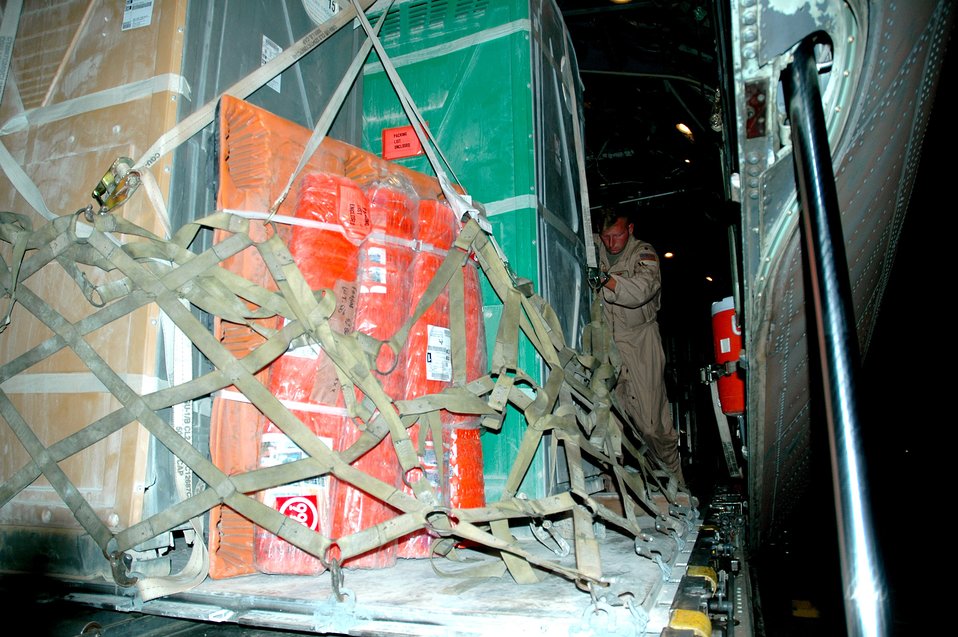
Pakistan relief efforts

CHAKLALA, Pakistan -- Maj. James Bruner helps upload relief supplies. A C-130 Hercules loaded with more than 15,000 pounds of supplies flew the earthquake relief supplies here from Southwest Asia Oct. 15. The major is with the 745th Expeditionary Airlift Squadron.